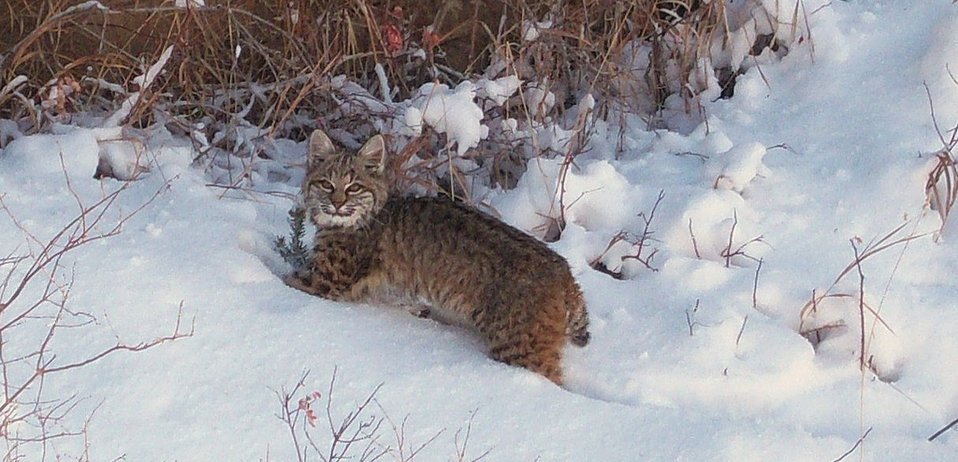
bobcat in snow